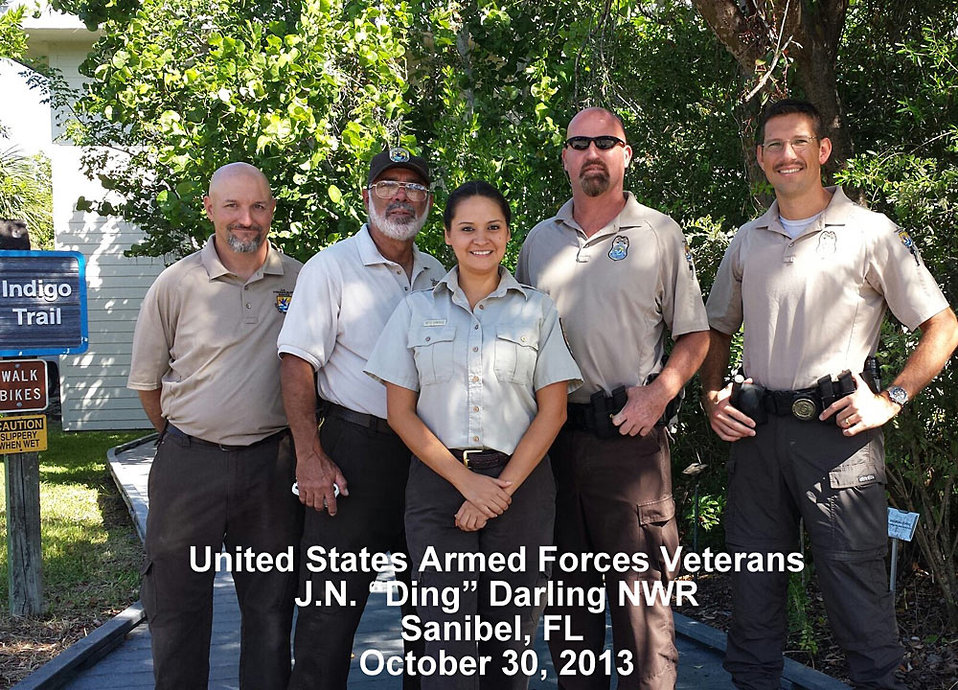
'Ding' Darling veterans -- Southeast Region

J.N. 'Ding' Darling National Wildlife Refuge in Florida has several staff members that were/are currently in the military. From left: Steve Maczek, U.S. Army Reserve - Operation Iraqi Freedom (OIF) & Operation Enduring Freedom (OEF), Willie Colon-Rios, U.S. Army - Vietnam 1968-1969, Ivette Gonzalez, U.S. Army - Operation Enduring Freedom (OEF) & Operation Iraqi Freedom (OIF), James Mathisen, U.S. Army - Operation Desert Storm, David Moore, U.S. Air Force, and Jeff Combs, U.S. Army. Refuge Ranger Jeff Combs is not pictured.